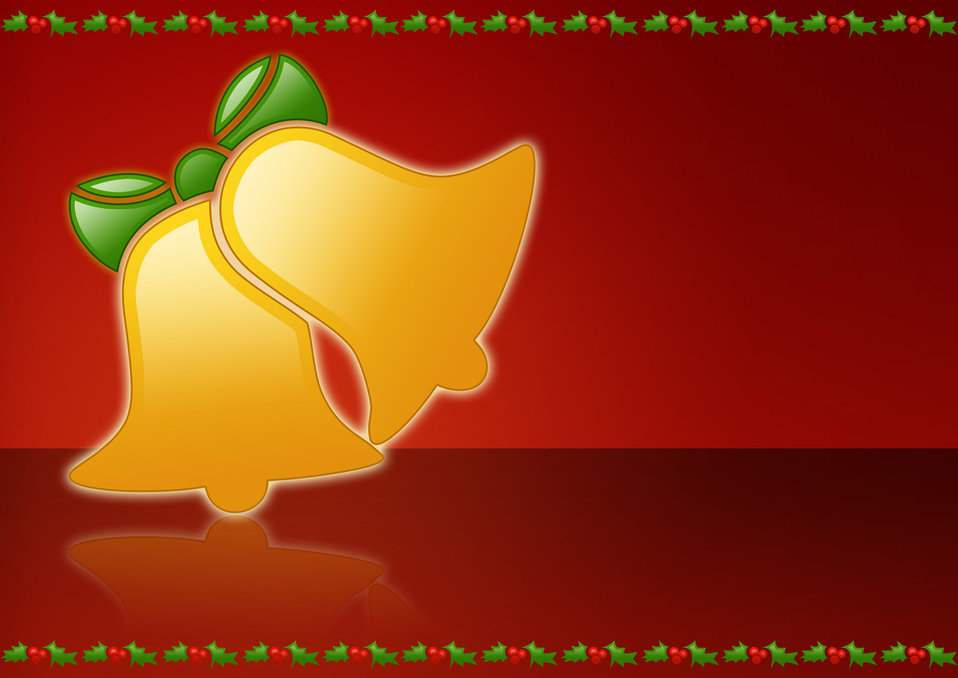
Christmas bells

Illustration of golden bells on a red christmas background.